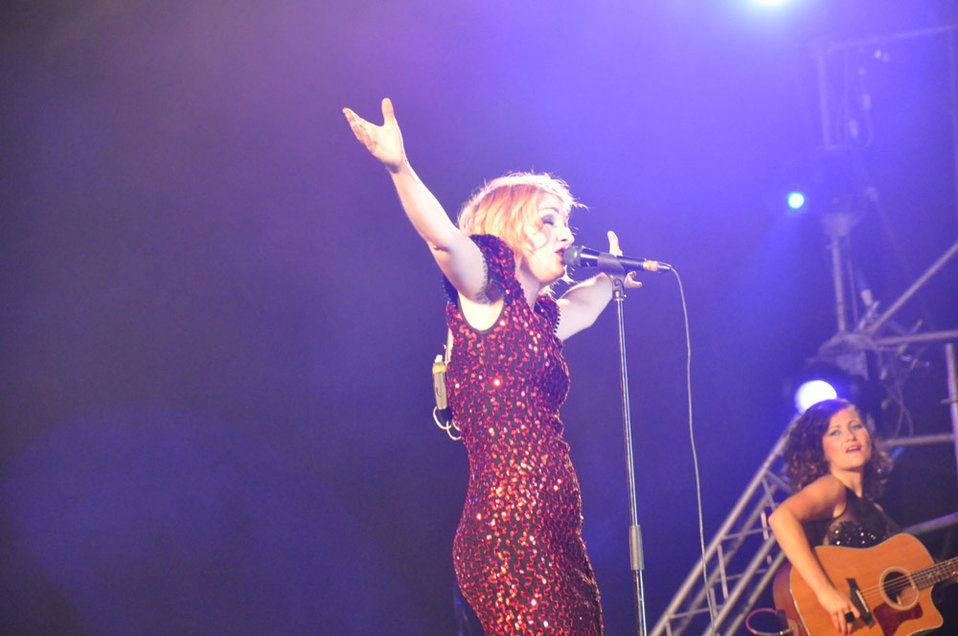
MTV EXIT Hanoi concert March 27, 2010

Australian singer Kate Miller-Heidke peforms in Hanoi.